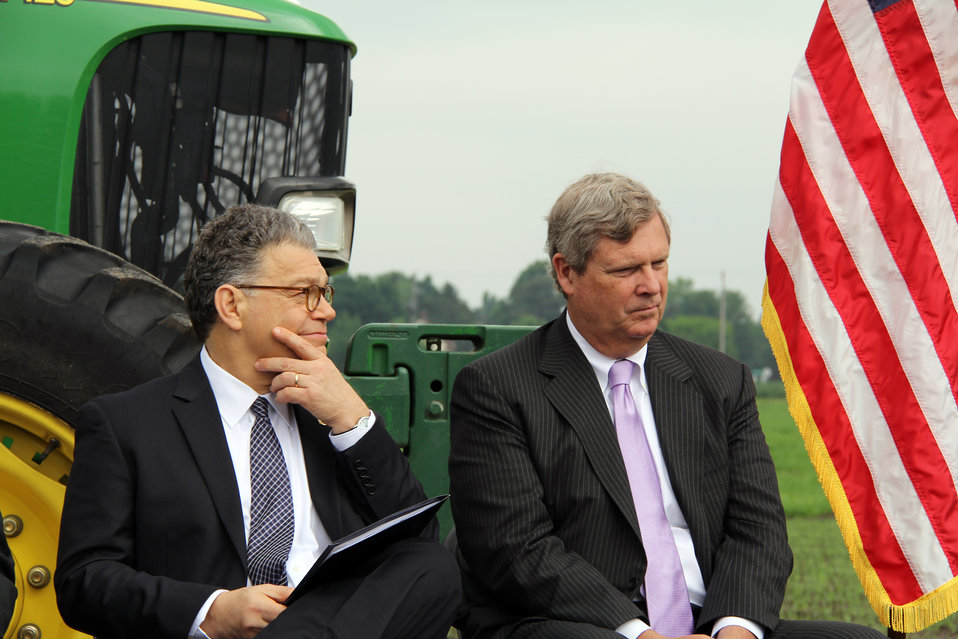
U.S. Senator Al Franken (MN) and Agriculture Secretary Tom Vilsack listen to a speaker at the launch of the Minnesota Agricultural Water Quality Certification program held at St. Paul University, St. Paul, MN on Monday, Jun. 10, 2013. This program is the first of its kind in the nation and is the product of a state-federal Memorandum of Understanding (MOU) signed by Minnesota Governor Dayton, Agriculture Secretary Vilsack and former Environmental Protection Agency (EPA) Administrator Lisa Jackson in January 2012.